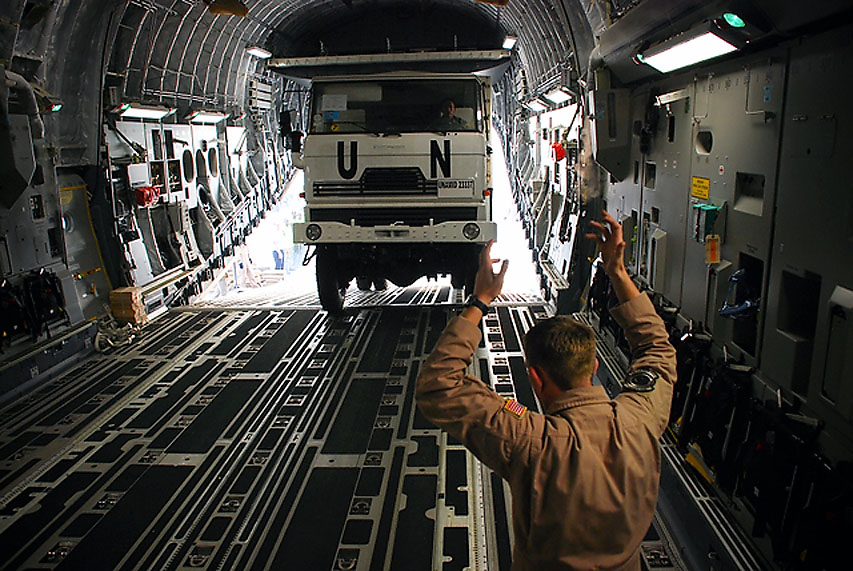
Airmen begin Darfur airlift operations

Technical Sgt. Sean Arnold guides Rwandan defense force trucks on board a C-17 Globemaster III Jan. 13 at Kigali International Airport in Rwanda. This is the first load of five airlifts to the United Nations-African Union mission in Darfur. Sergeant Arnold is from Travis Air Force Base, Calif.